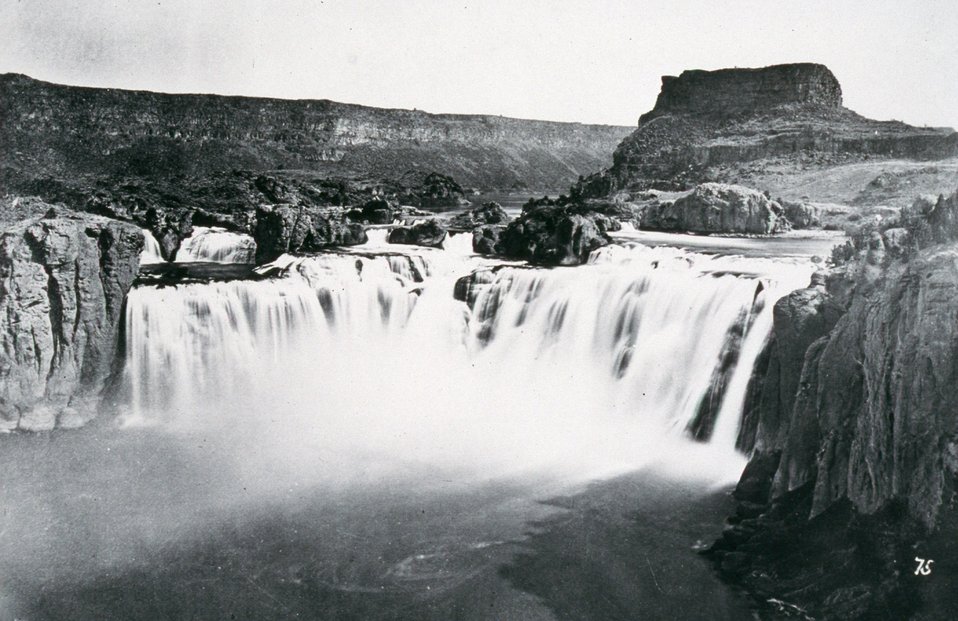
Shoshone Falls Shoshone Field Office USRD Upper Snake River District